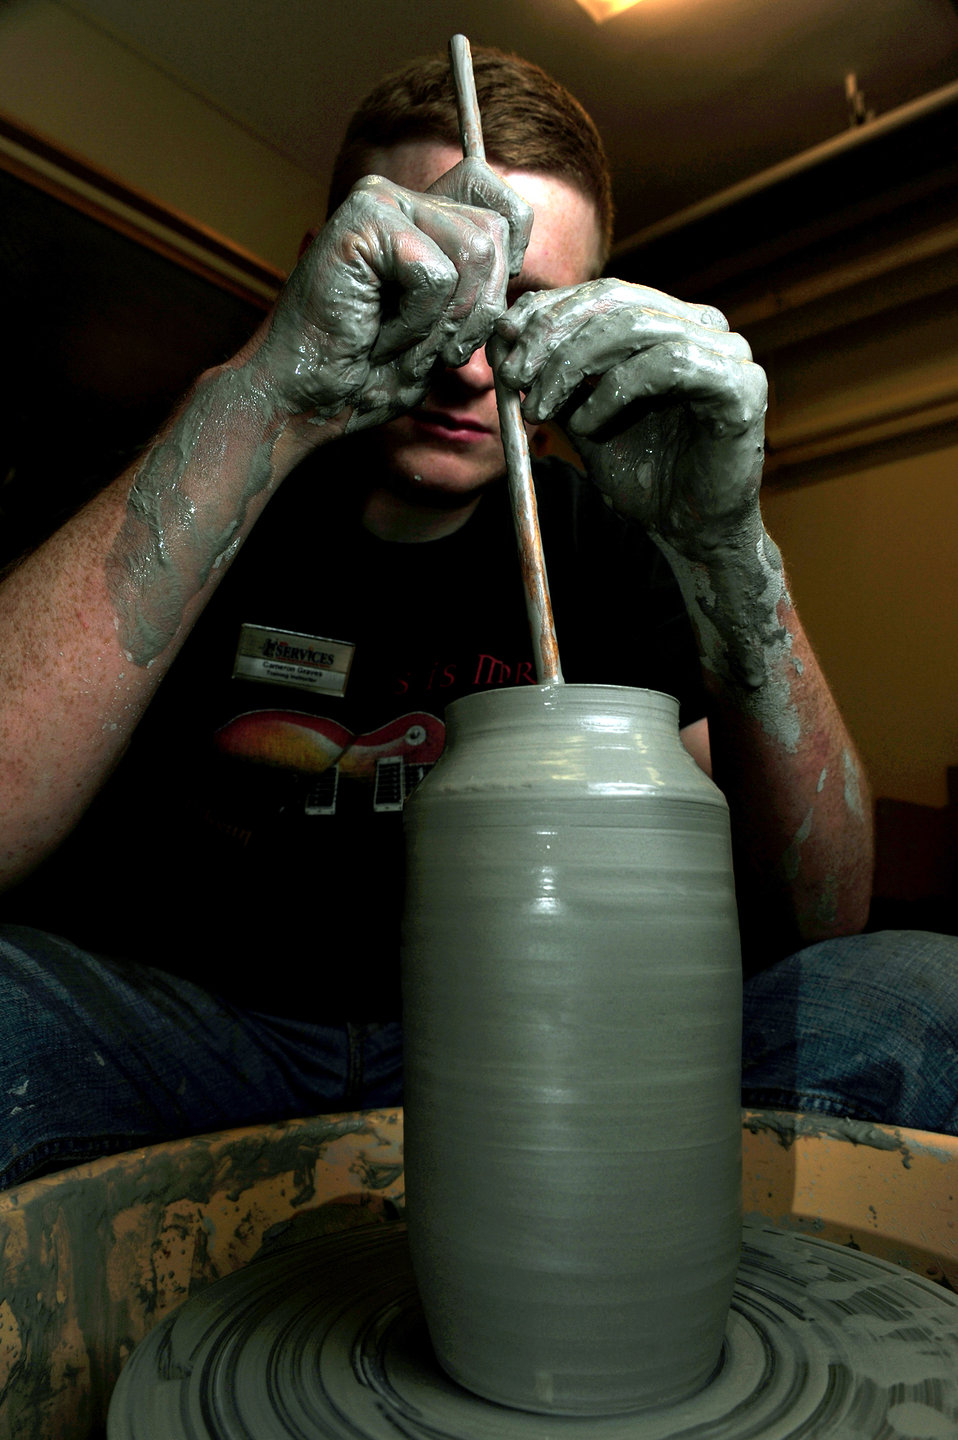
Perfect form

Airman 1st Class Cameron Graves molds a vase during a pottery class at the Arts and Crafts Center Dec. 15, 2010, at Ramstein Air Base, Germany. Airman Graves instructs pottery classes after duty for all military cardholders, and is a vehicle maintainer with the 86th Vehicle Readiness Squadron.